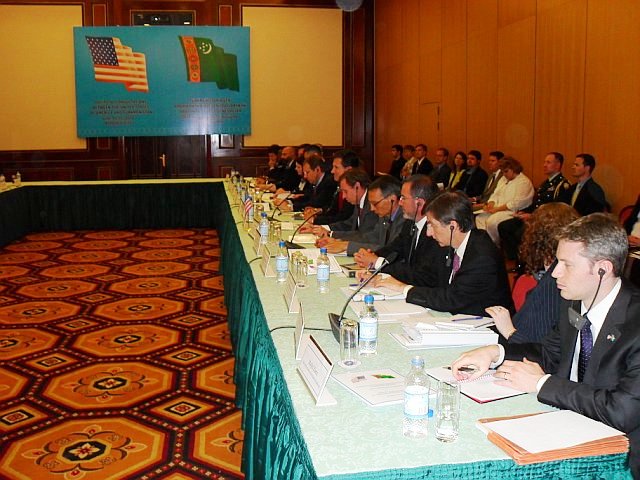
Assistant Secretary Blake Leads Official Delegation to First Annual Bilateral Consultations With Turkmenistan Government

U.S. Assistant Secretary of State for South and Central Asian Affairs Robert O. Blake, accompanied by U.S. Assistant Secretary for Democracy, Human Rights and Labor Michael Posner and Director for Central Asia at the National Security Council, Kurt Donnelly, leads a large official delegation to the first Annual Bilateral Consultations (ABCs) with the Government of Turkmenistan in Ashgabat on June 16, 2010.